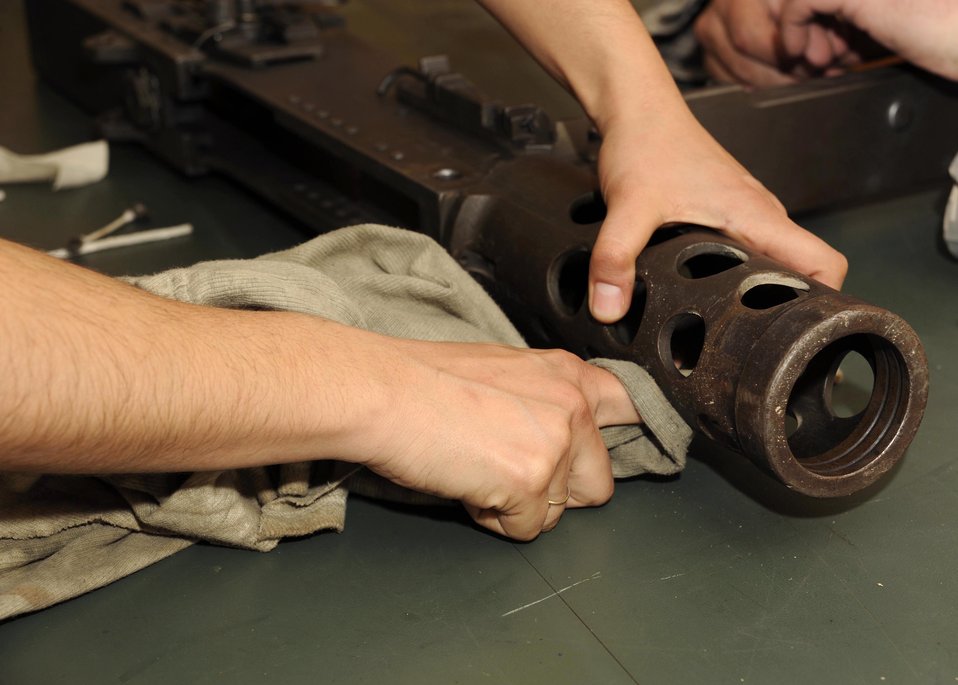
Operation Iraqi Freedom

Senior Airman Elizabeth Gonzalez cleans the .50 caliber machine gun at the armory at Sather Air Base, Iraq, March 12. Airman Gonzalez is one of only a few security forces members qualified on the .50 cal here. Airman Gonzales is a 447th Expeditionary Security Forces Squadron heavy weapons operator.